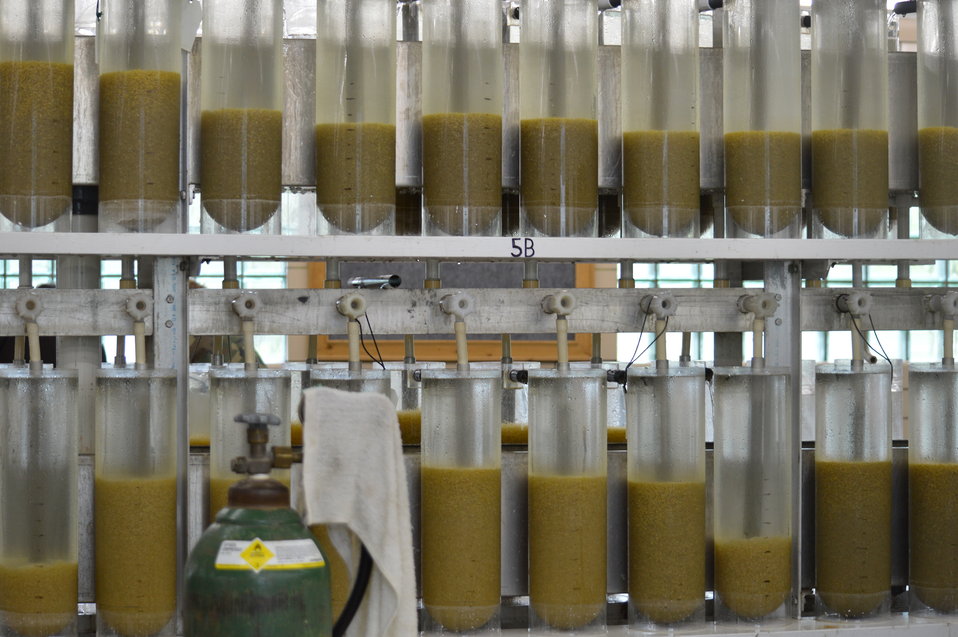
Eggs in upwelling jars

Garrison Dam National Fish Hatchery in North Dakota.